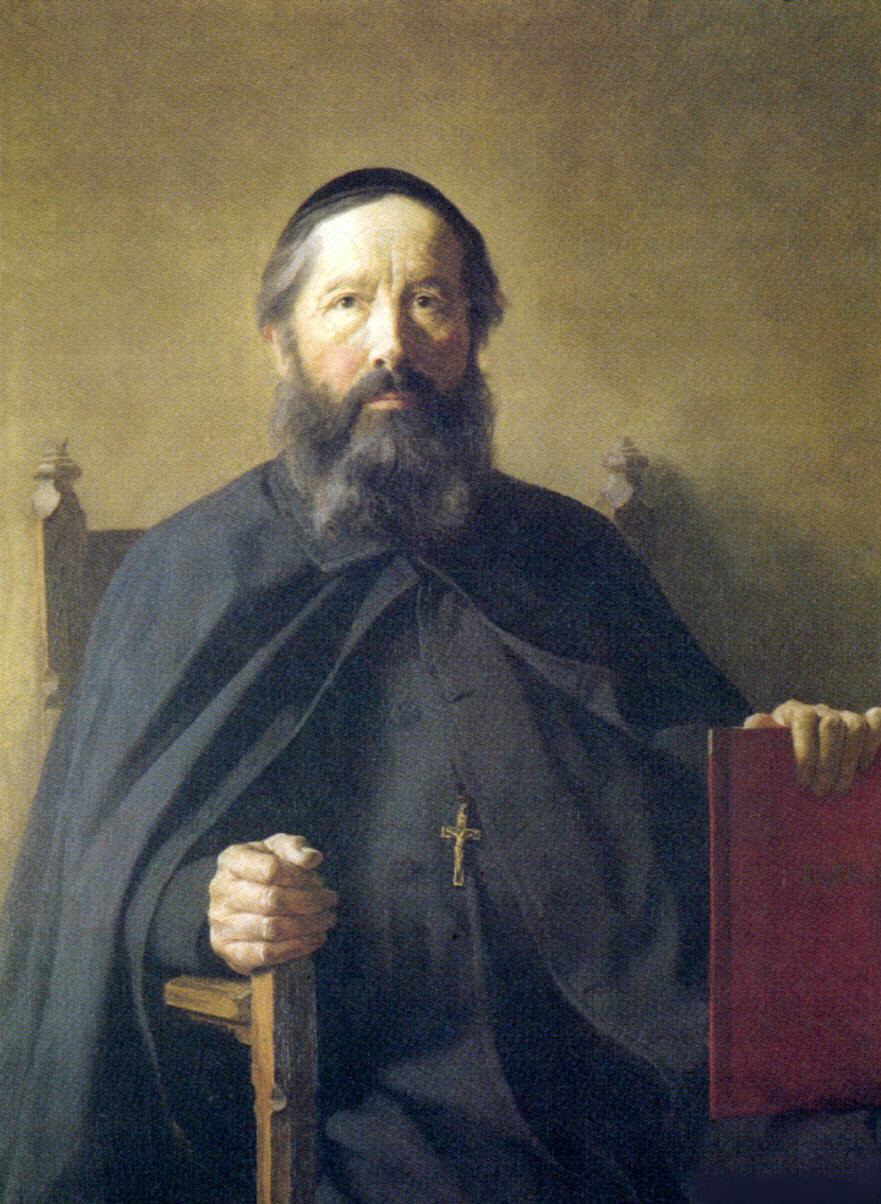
Adolf Aich († 1909); Gemälde im Schloss Liebenau